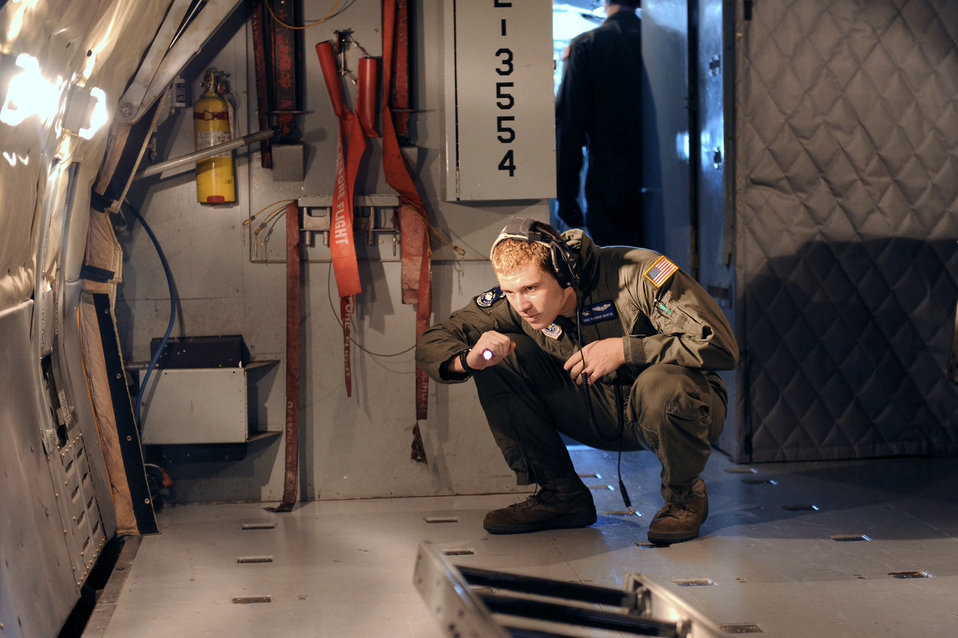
Air Refueling

Staff Sgt. Patrick Martin inspects the rear cargo door on a KC-135 Stratotanker during a training mission, Apr. 21, 2010, at McConnell Air Force Base, Kan. Sergeant Martin is a boom operator assigned to the 344th Air Refueling Squadron.